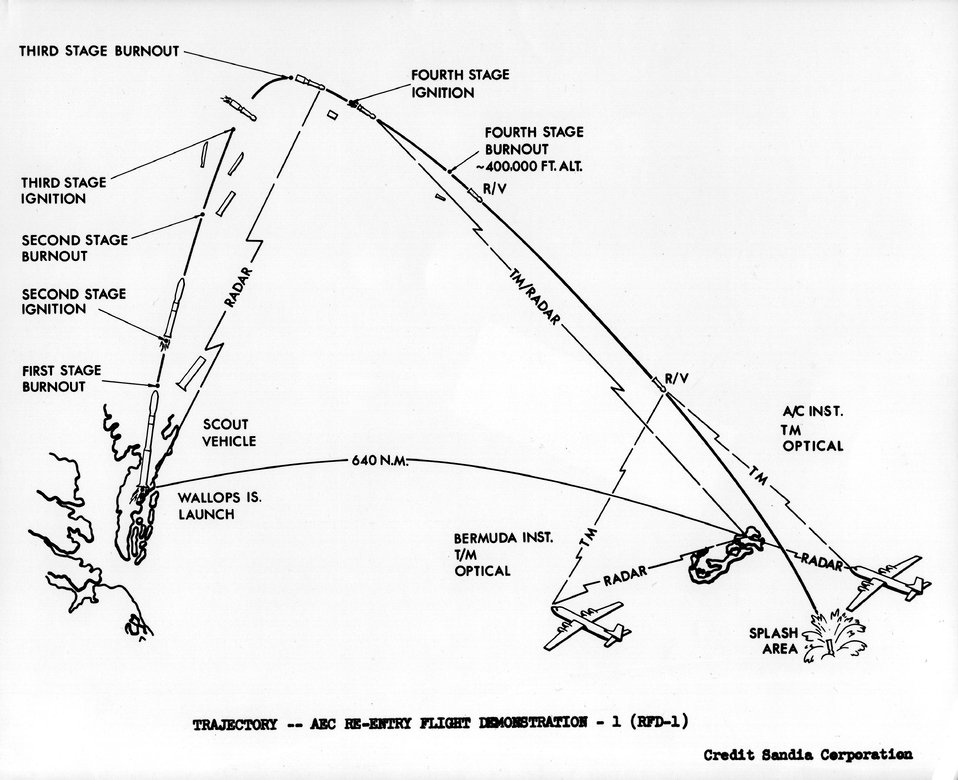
No caption. c. 1963